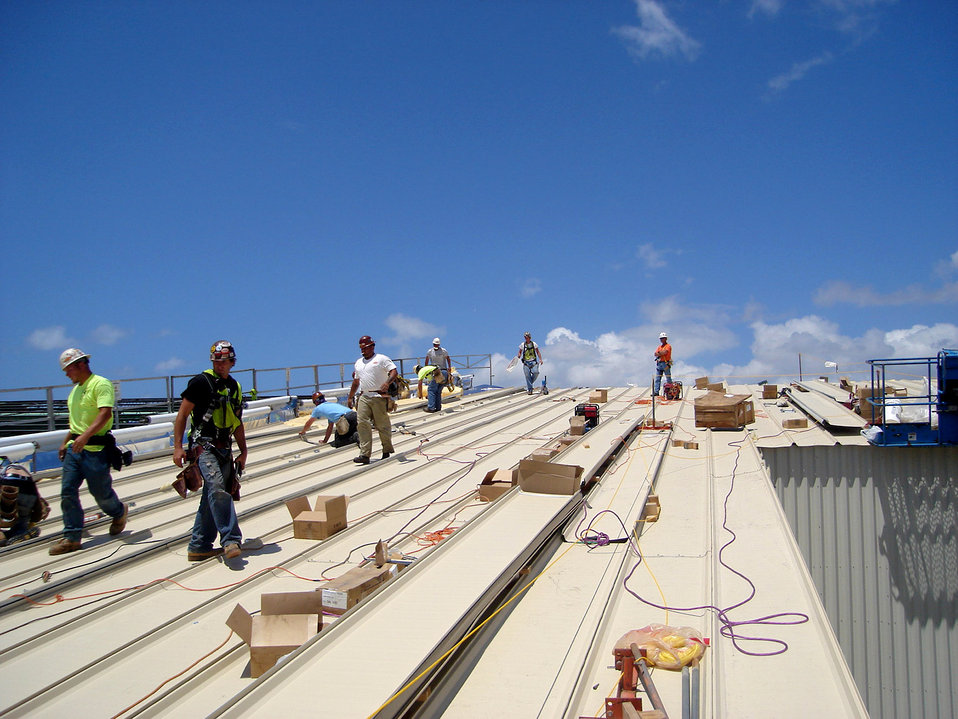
AFCEE builds new C-17 hangar at Hickam

URS employees, contracted by the Air Force Center for Engineering and the Environment, use metal siding to install the roof of the new C-17 Globemaster III Corrosion Control Hangar at Hickam Air Force Base, Hawaii. The hangar will be used for painting and general maintenance functions for the eight C-17 aircraft assigned to Hickam AFB.